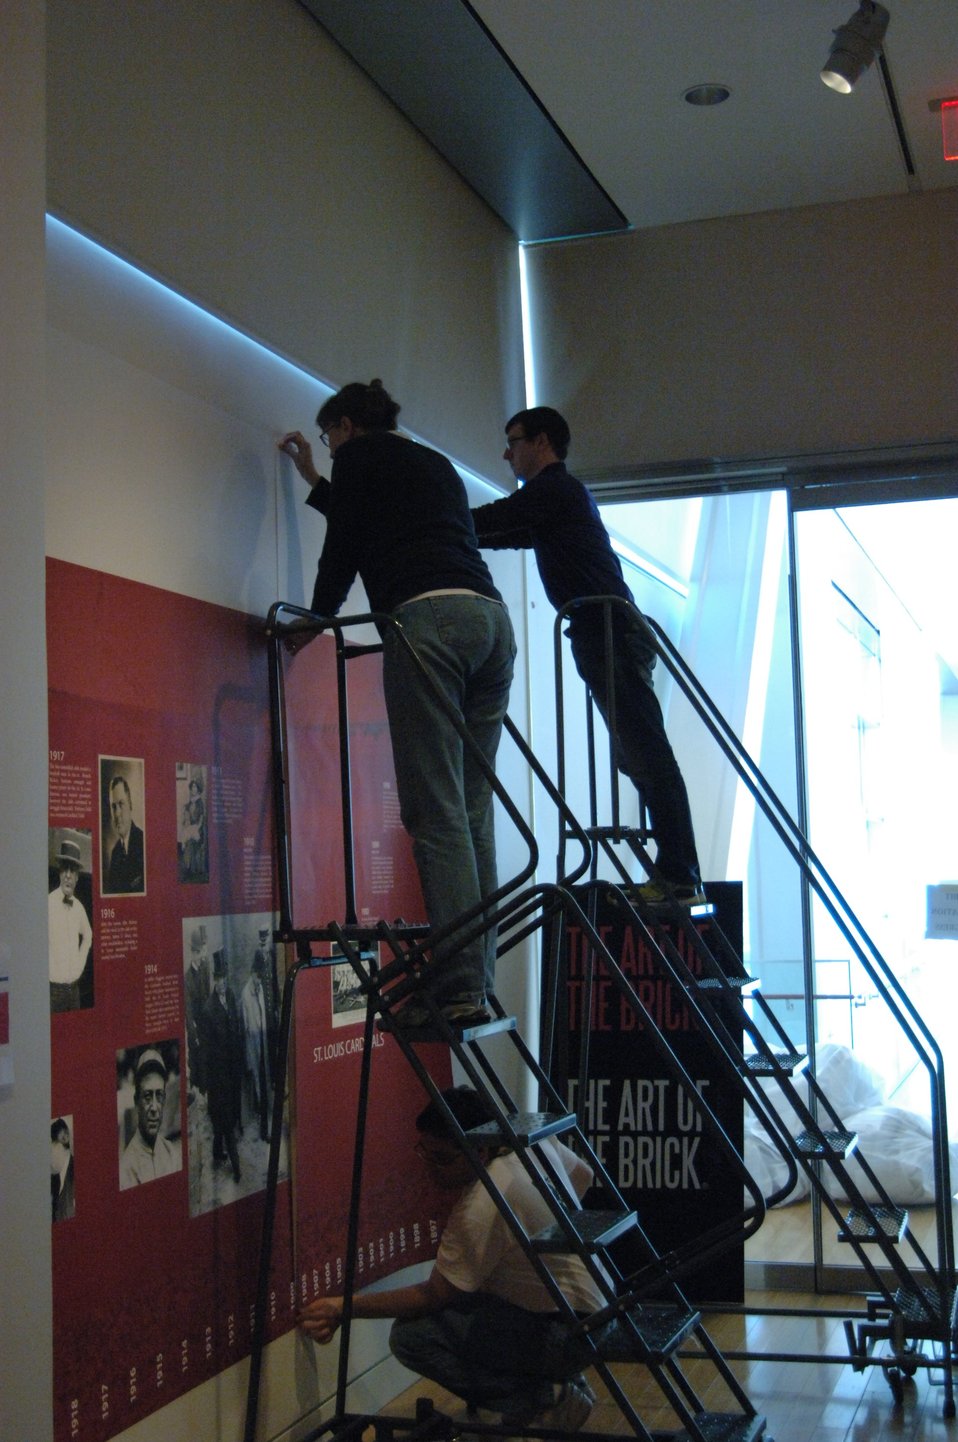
Curator Christine Mouw and museum staffers, Stephen Charla and Jay Patton, installing text panels for the St. Louis Cardinals Baseball exhibit in 2012.; Location: William J. Clinton Presidential Library, Little Rock, AR